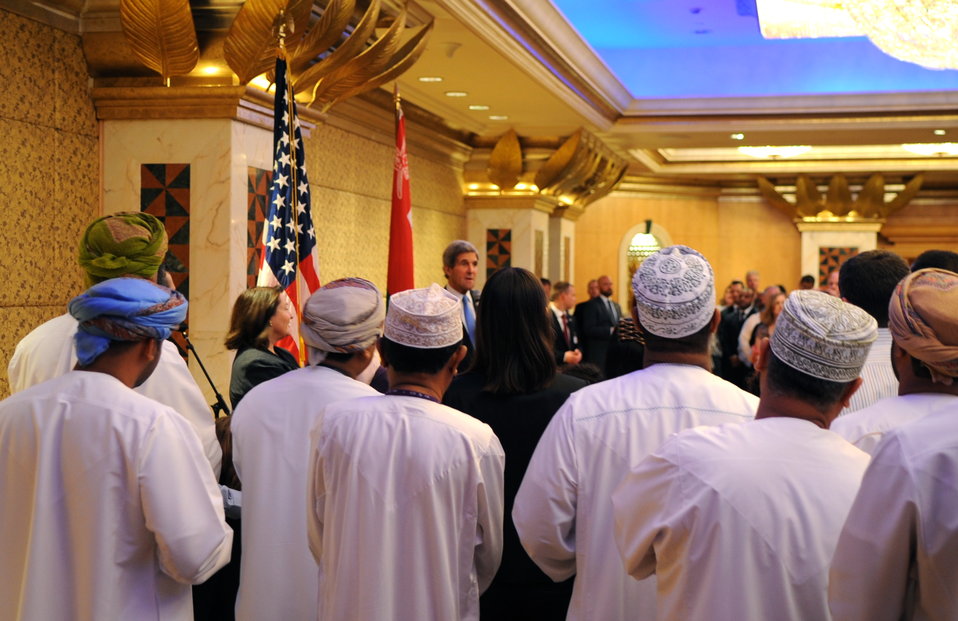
Secretary Kerry Meets With Embassy Muscat Staff

U.S Secretary of State John Kerry speaks to staff of the U.S. Embassy in Muscat, Oman, on May 22, 2013.